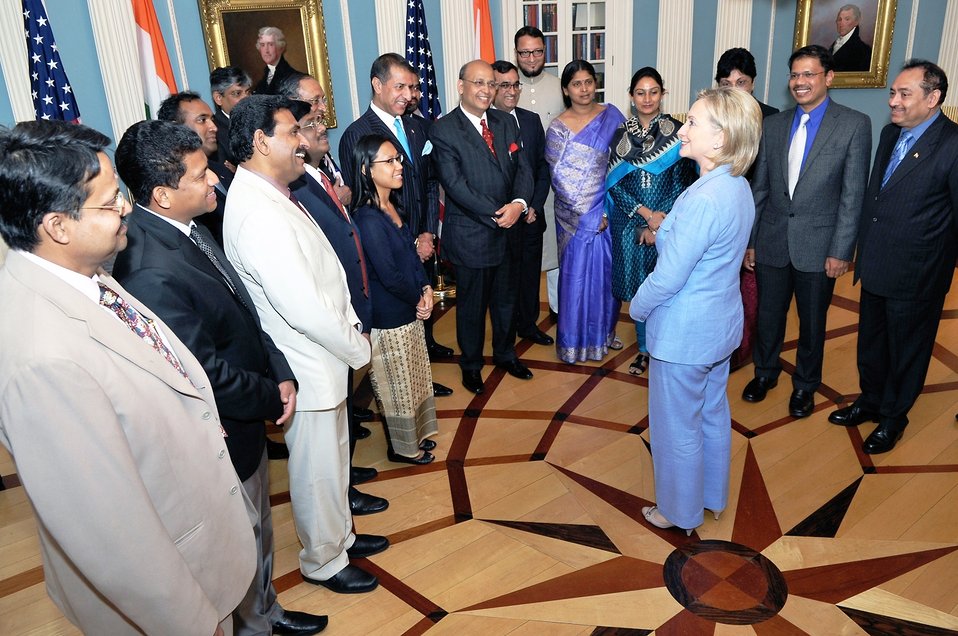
Secretary Clinton Speaks With Indian Parliamentarians

U.S. Secretary of State Hillary Rodham Clinton speaks with a visiting delegation of Indian parliamentarians at the U.S. Department of State in Washington, D.C., on June 17, 2010.